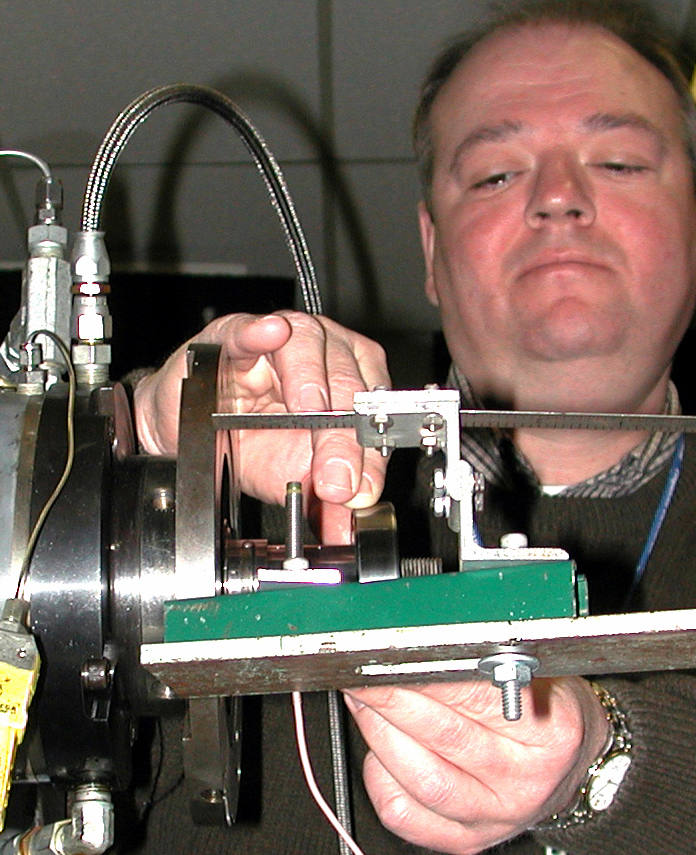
Engineer follows path to education, success

WRIGHT-PATTERSON AIR FORCE BASE, Ohio -- Dr. Nelson Forster readies a bearing test rig for measurement. Nelson, who works for the Air Force Research Laboratory at Wright-Patterson Air Force Base, Ohio, holds five patents. He hopes more young people will follow in his footsteps as the Air Force faces a critical shortage of scientists and engineers.